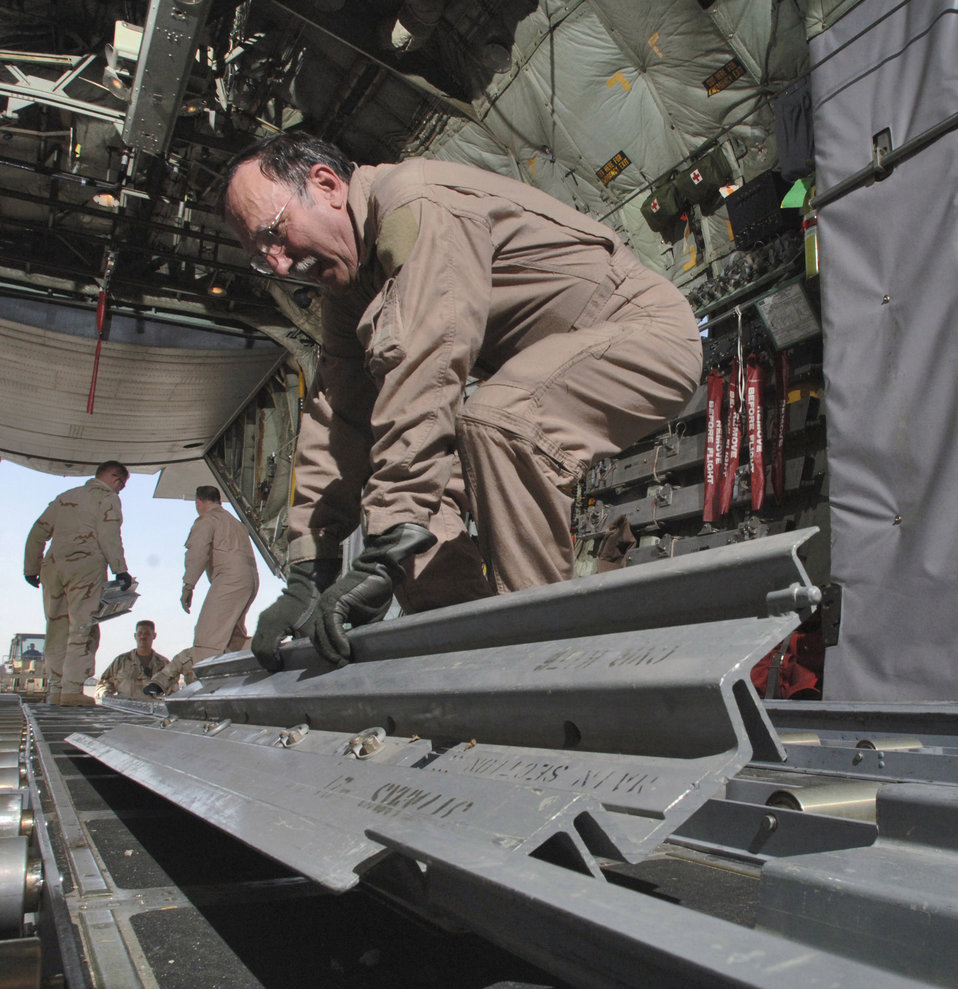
Special delivery

Senior Master Sgt. Ted Poplarchik picks up a restraint rail during reconfiguration inside a C-130 Hercules after an airdrop to forward operating bases near the Pakistan border Thursday, March 9, 2006. Sergeant Poplarchik is with the 144th Airlift Squadron, Kulis Air National Guard Base, Alaska, and deployed to the 774th Expeditionary Airlift Squadron, Bagram Air Base, Afghanistan.